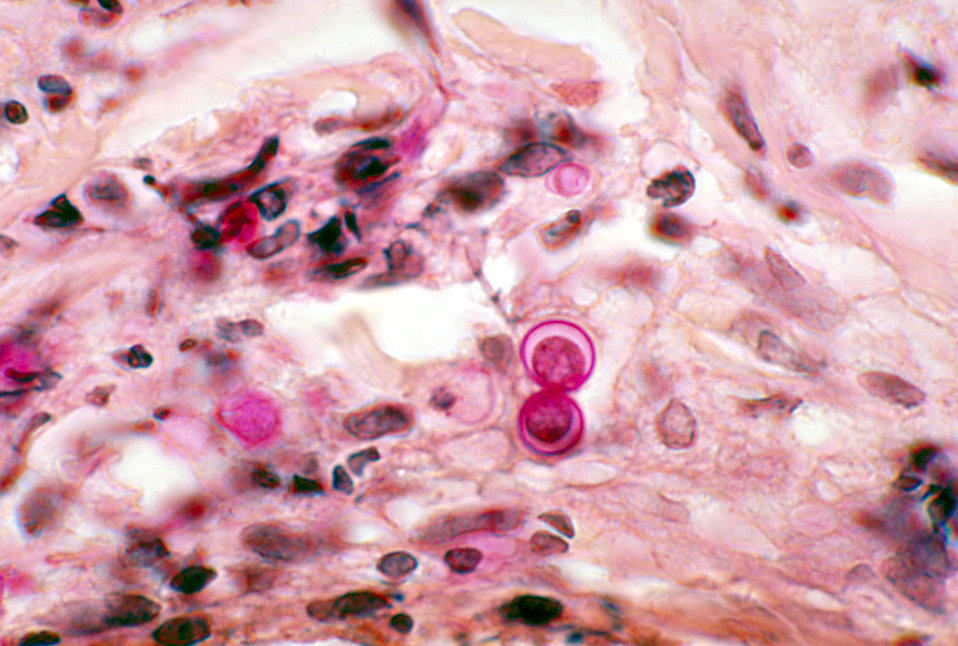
This micrograph reveals the histopathologic changes in phaeohyphomycosis due to Wangiella dermatitidis using PAS stain.